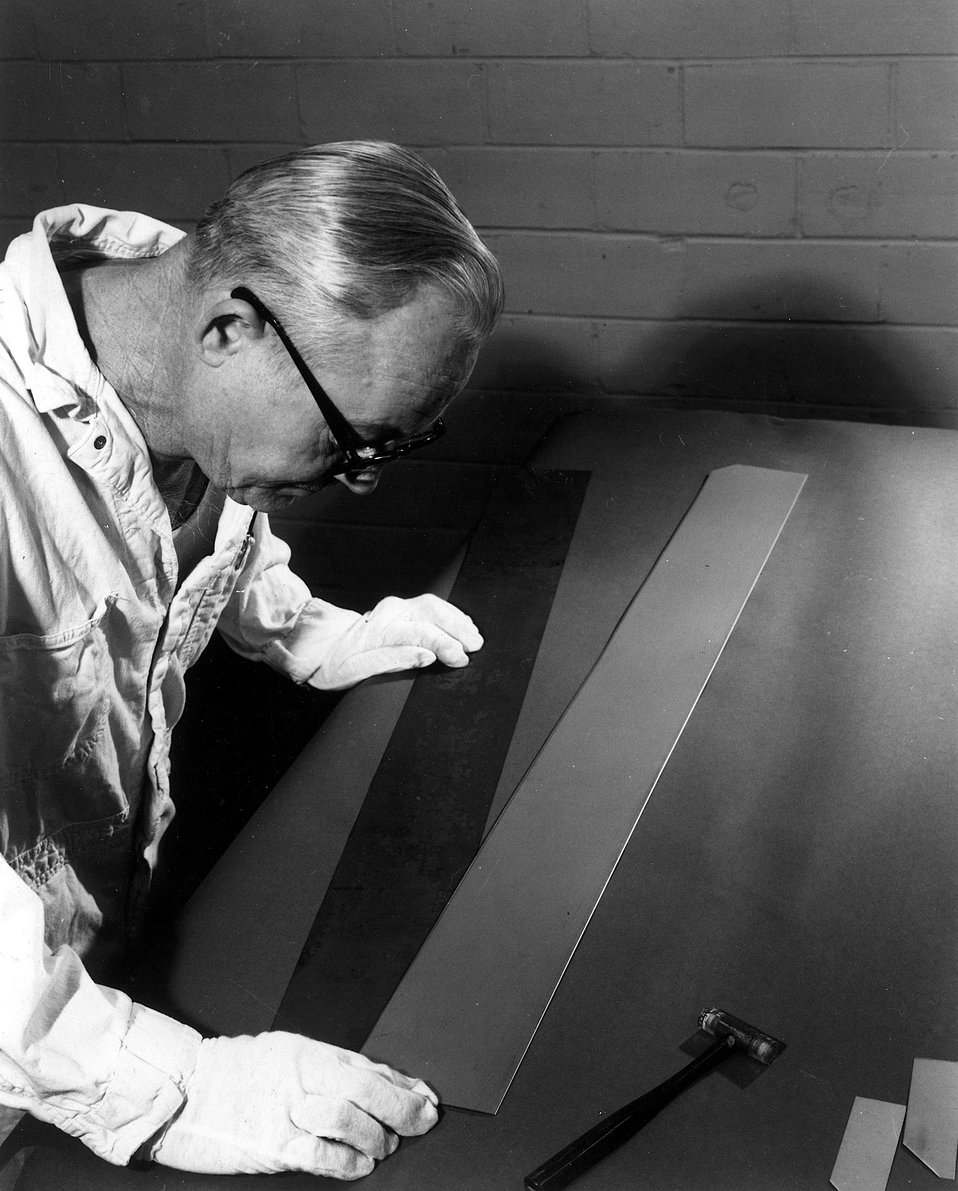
Photo shows an enriched uranium foil (dark strip) being inserted into a stainless steel envelop at the Oak Ridge (Tenn.) Y012 Plant. Circa 1970.